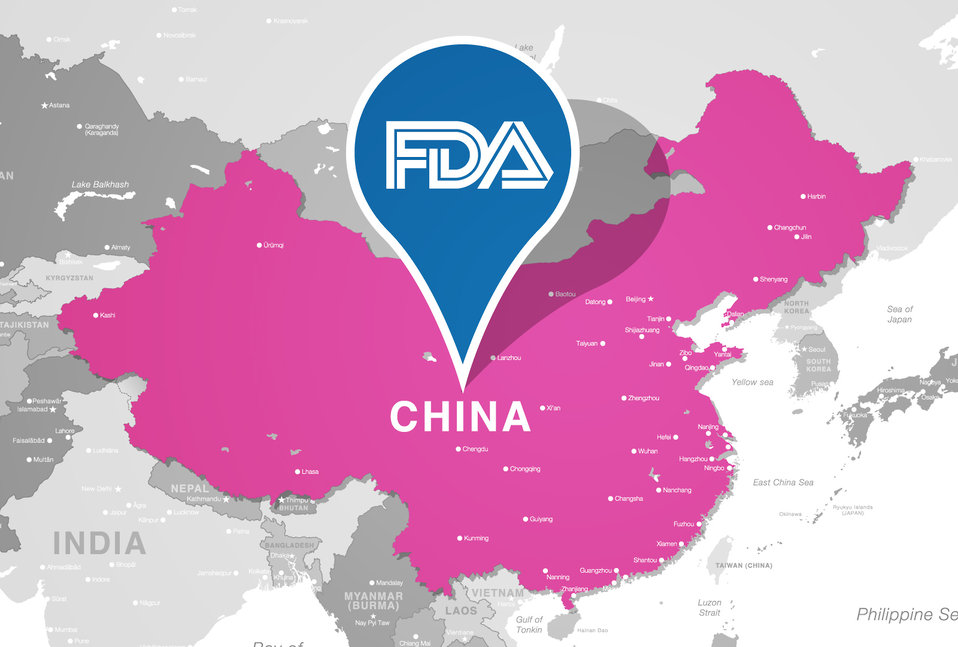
FDA’s China Offices Focus on Product Safety

In 2007 and 2008, Chinese products tainted with melamine—including pet food, baby formula, and milk products—caused illness and some deaths in many countries. This underscored the need for the Food and Drug Administration to have experts based in China who could help prevent unsafe products from entering the U.S. Read this FDA Consumer Update: www.fda.gov/ForConsumers/ConsumerUpdates/ucm284461.htm

Consumer Updates are a quick and easy way to pick up important health information for you and your family. For a complete list of Consumer Updates see the Consumer Updates photo set: www.flickr.com/photos/fdaphotos/sets/72157624900896241/.

For the latest Consumer Updates go to: www.fda.gov/forconsumers/consumerupdates